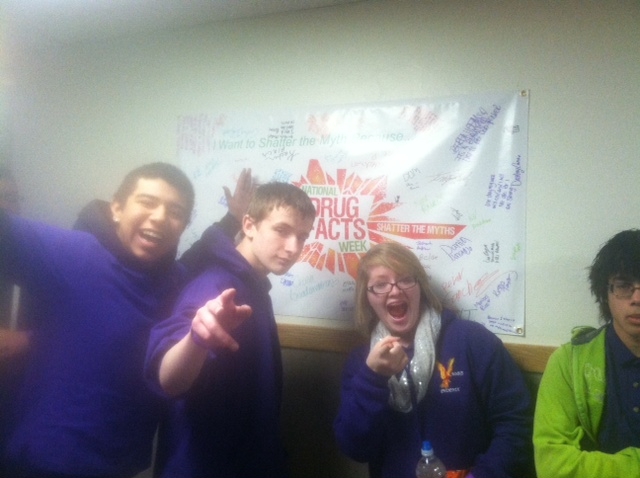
Idaho Teens Show Off their Banner

South Central Public Health provided activities at Mt. Harrison High School during NIDA's National Drug Facts Week in Heyburn, Idaho.
Teenagers from Mt. Harrison High School joined forces with other teens and scientists across the United States as part of the event.